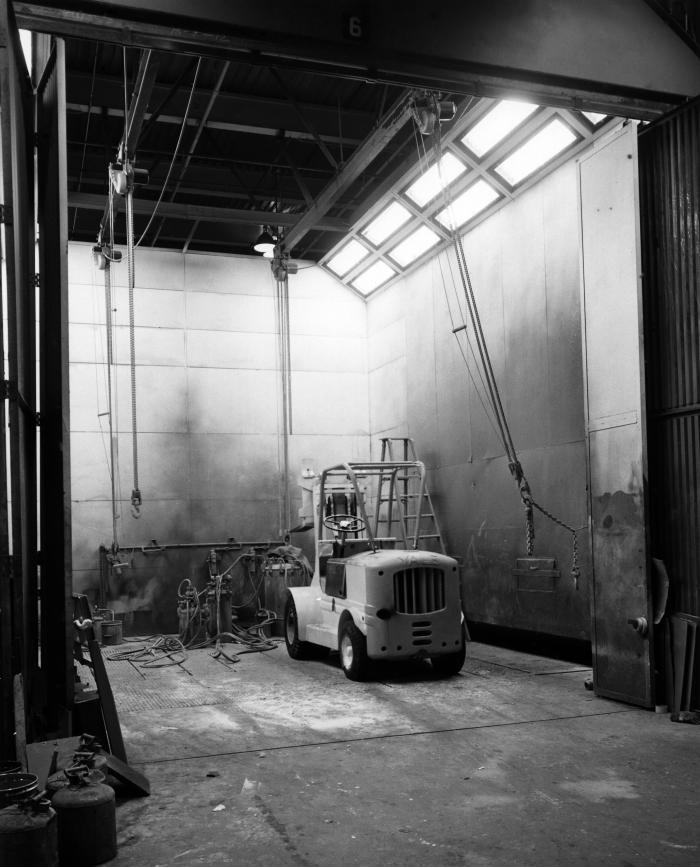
This historic image, provided by the Center for Disease Control's (CDC), National Institute for Occupational Safety and Health (NIOSH), depicted the interior of a Yale Towne Mfg. Co. paint spray booth. See Phil 9562 for another view of the spray booth's interior, which included an industrial spray painter practicing his craft as he was painting the motorized forklift seen here in this view. Though technologic advancements made many of the formerly manual tasks easier, and faster, the potential dangers lurking inside such a factory, still mandated, and mandates even today, the adherence to strict protocols in order to create a safer working environment.